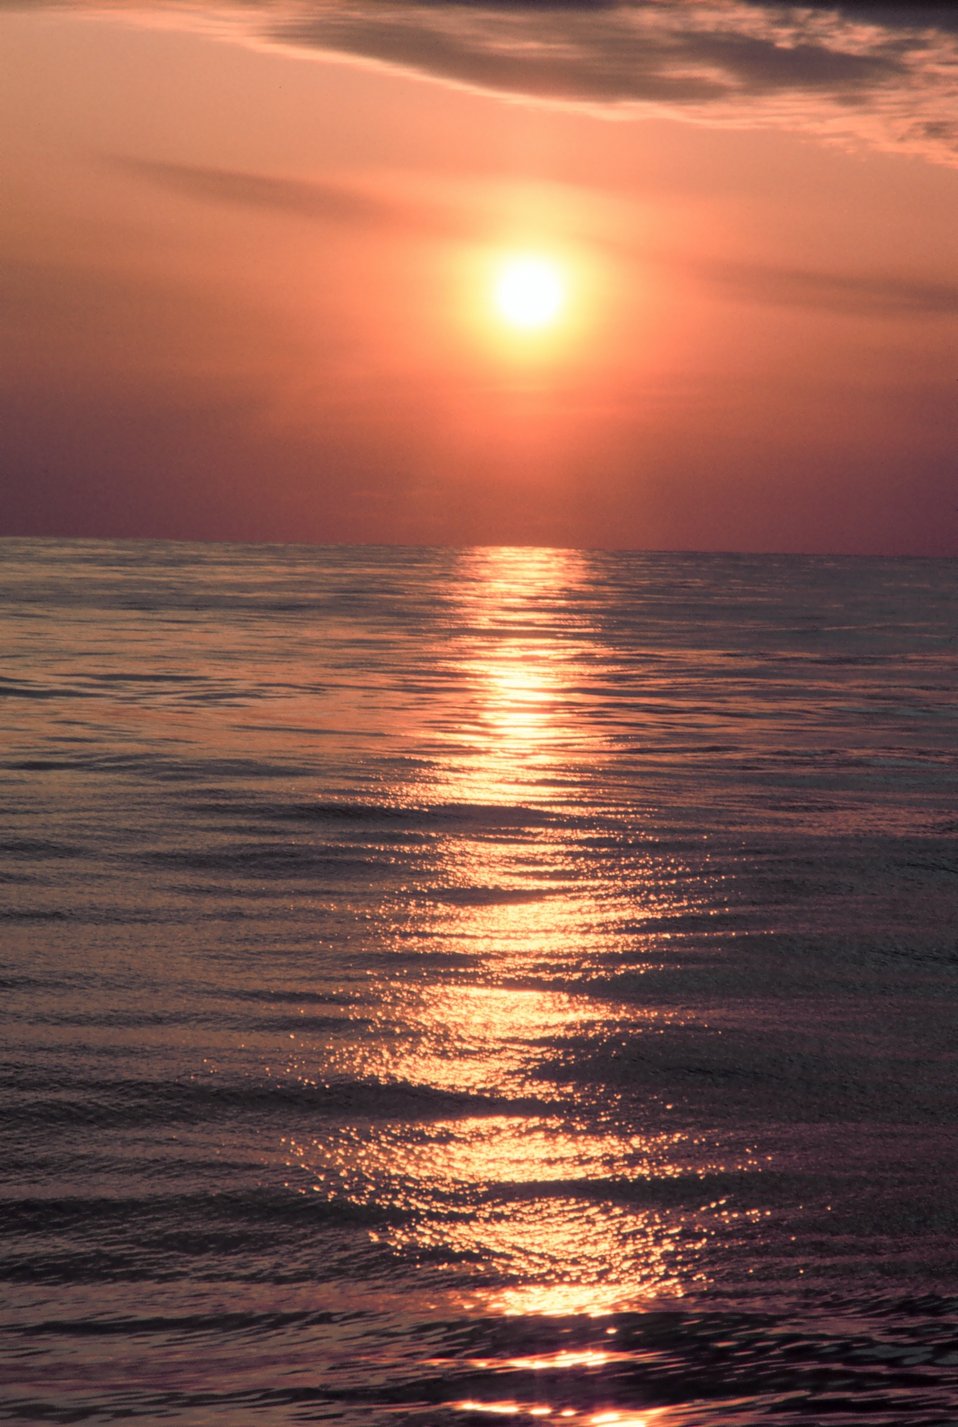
A streak of orange sunlight reflecting off the ocean at sunrise.